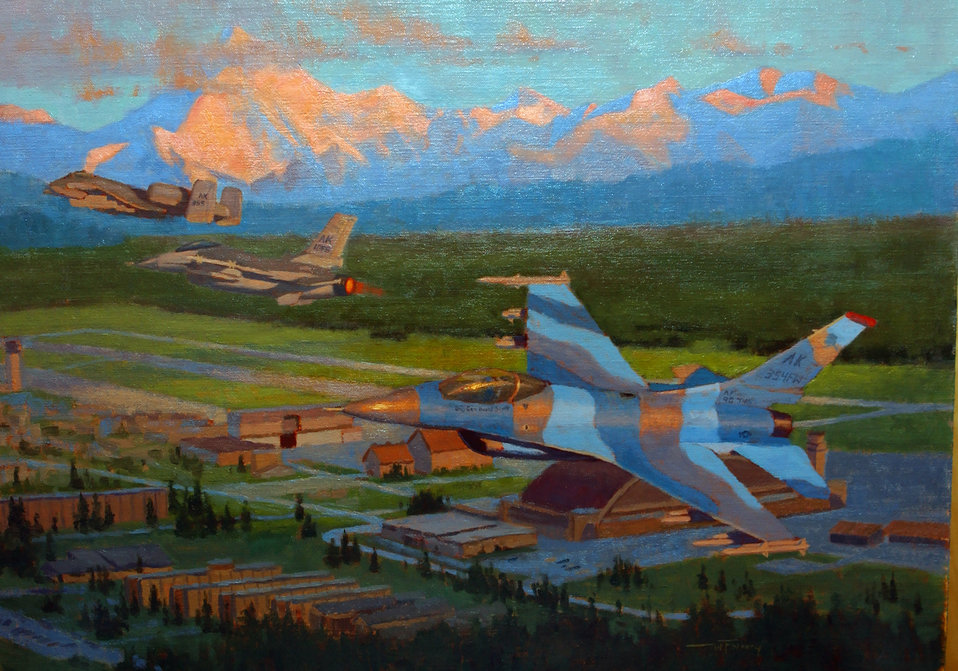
The First Iceman Aggressor